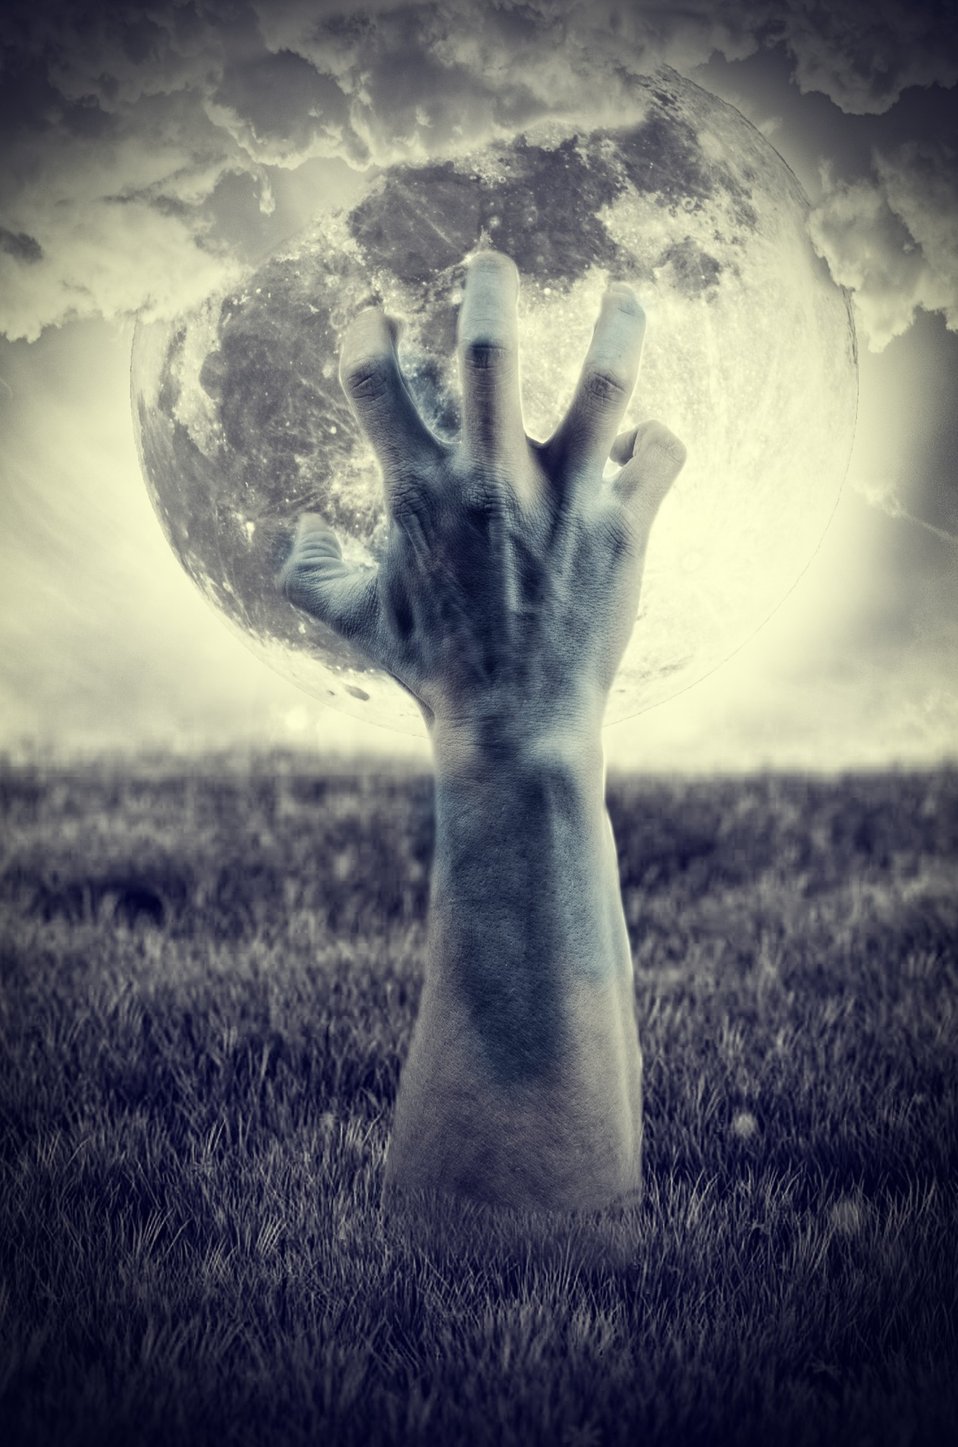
Risen dead man.